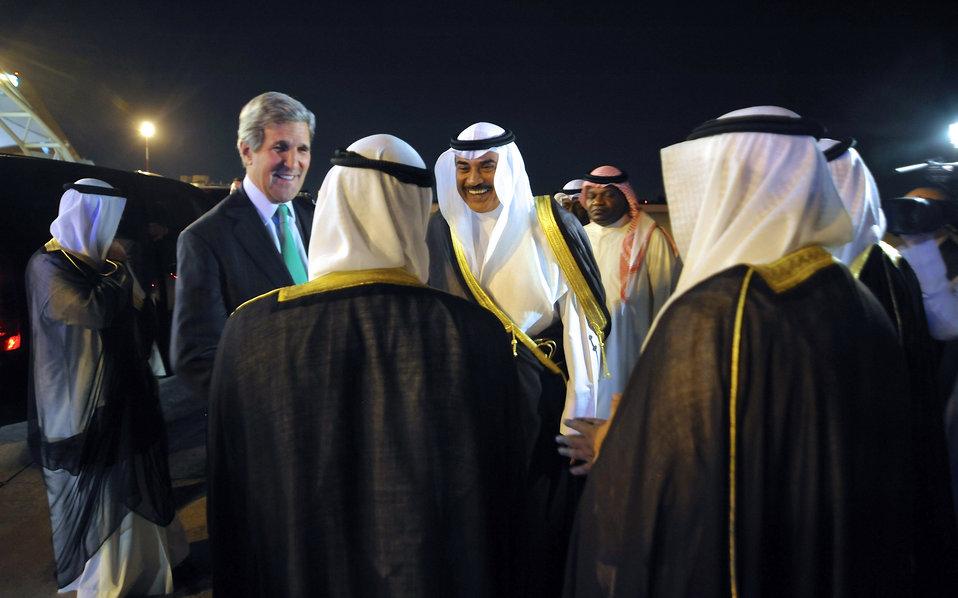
Secretary Kerry Arrives in Kuwait City

U.S. Secretary of State John Kerry and Sheikh Sabah Khalid Al-Hamad Al-Sabah, Kuwaiti Deputy Prime Minister and Minister of Foreign Affairs, talk with other Kuwaiti officials upon his arrival in Kuwait City, Kuwait, on June 25, 2013.